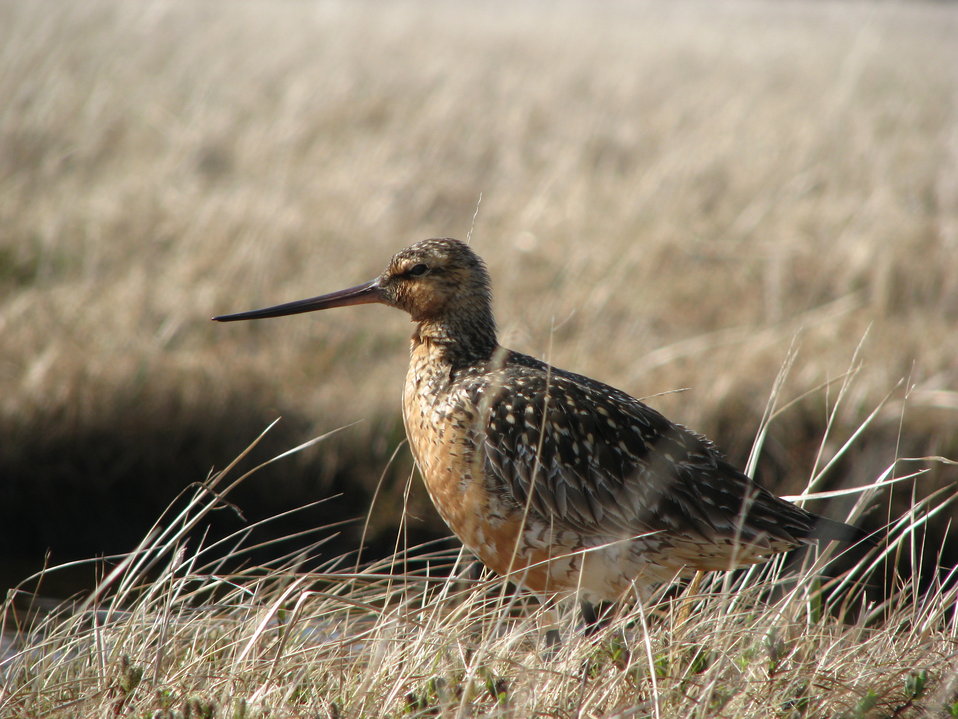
Bar-tailed Godwit

Yukon Delta NWR